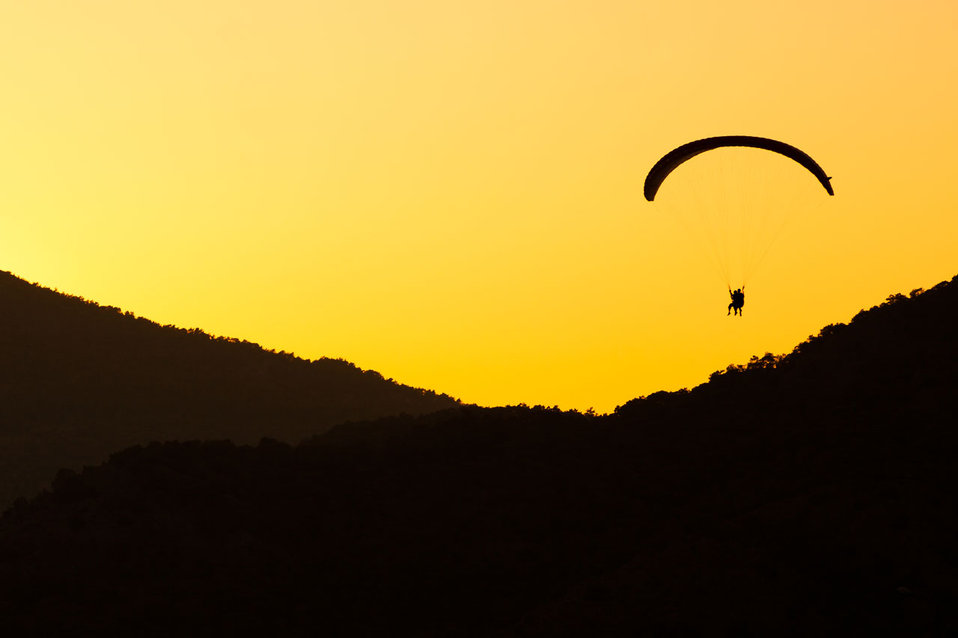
Paragliding at sunset over mountains.